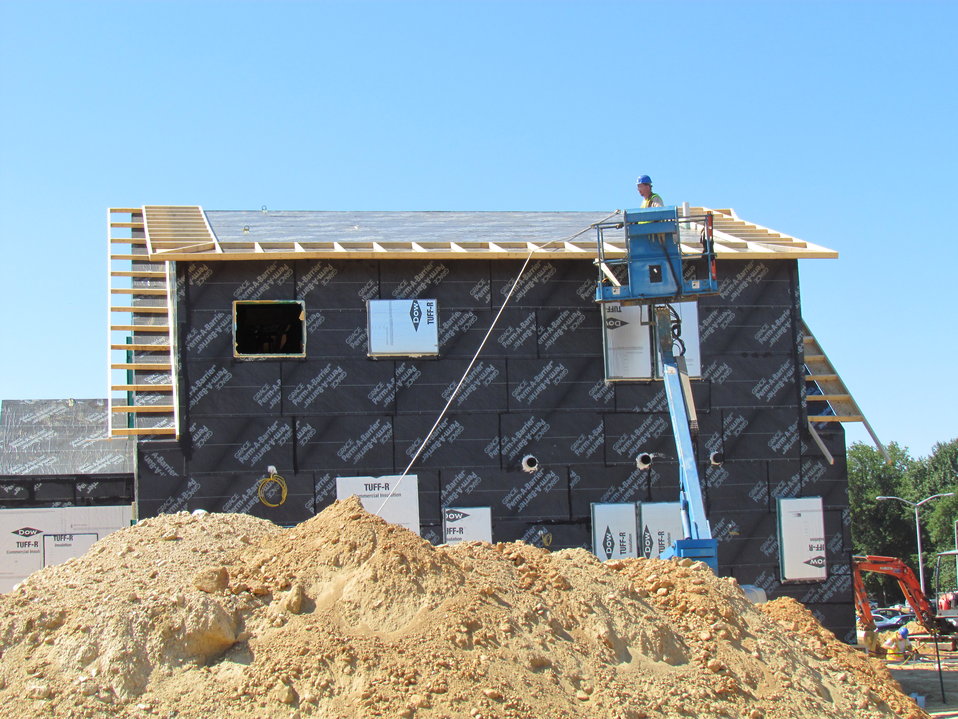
Net-Zero Energy Residential Test Facility - Workmen installing overhang structure on rear of facility.